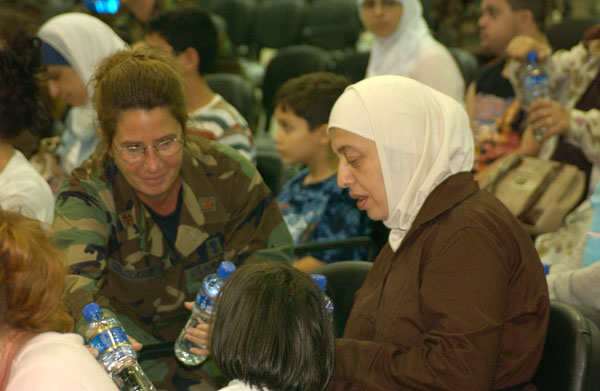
Assisted departure

Members of the 39th Air Base Wing provide assistance to families arriving at Incirlik Air Base, Turkey, today following their decision to leave Lebanon. Servicemembers from Incirlik are among the Airmen from various Air Force units supporting the assisted departure of American citizens from Lebanon.